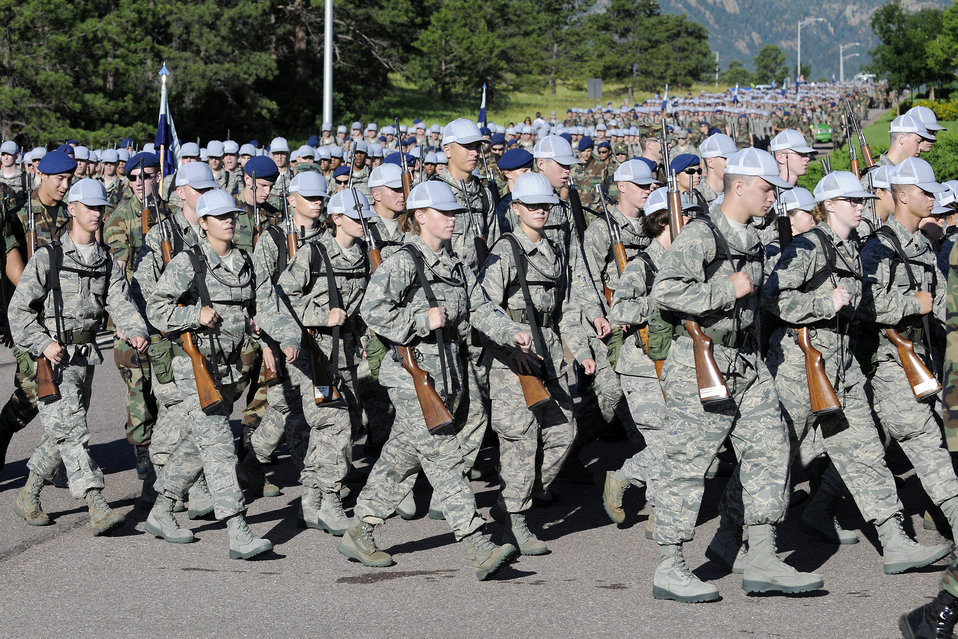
New cadets discover Jacks Valley

More than 1,300 U.S. Air Force Academy basic cadets march out to the Jacks Valley training area near Colorado Springs, Colo., July 13 to begin the field training portion of basic training.